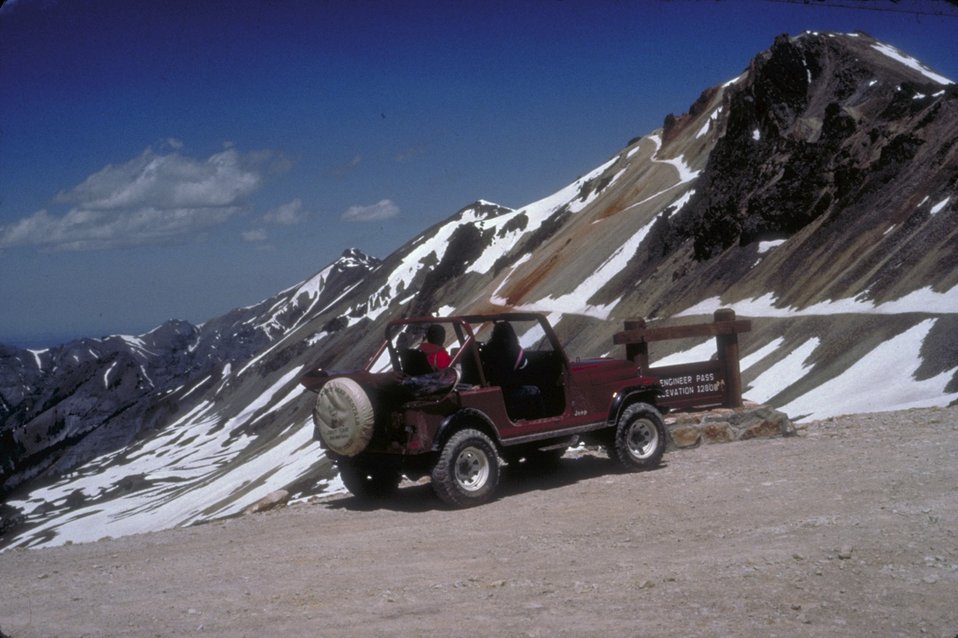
Back Country